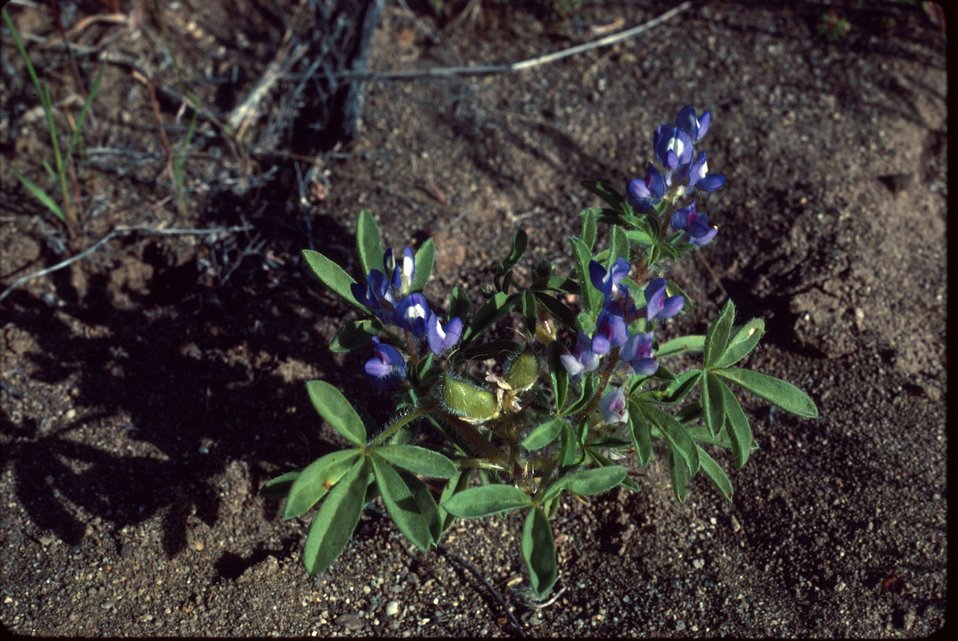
Lupine